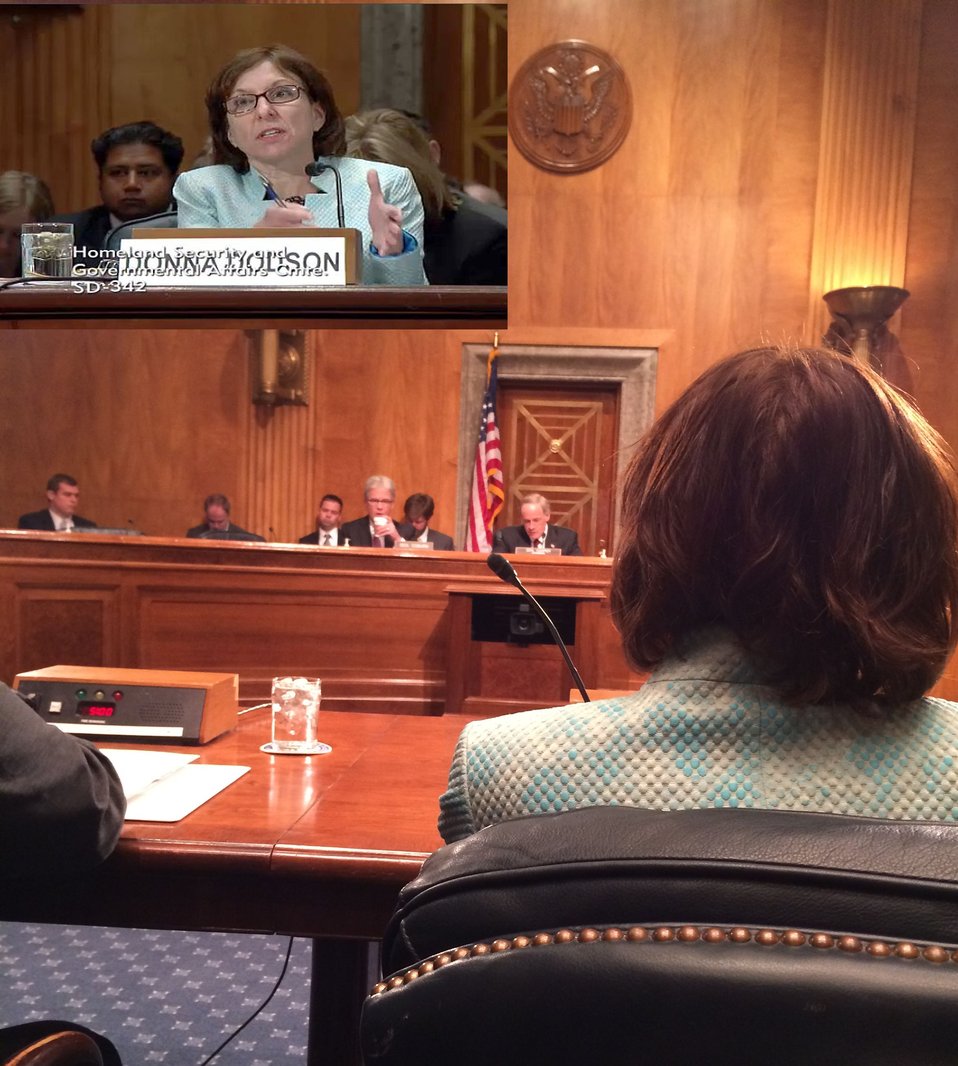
Donna F. Dodson, NIST Chief Cybersecurity Advisor

Donna F. Dodson, (top left and right) NIST Chief Cybersecurity Advisor testifies before the Senate Committee on Homeland Security and Governmental Affairs on “Strengthening Public-Private Partnerships to Reduce Cyber Risks to Our Nation’s Critical Infrastructure”.